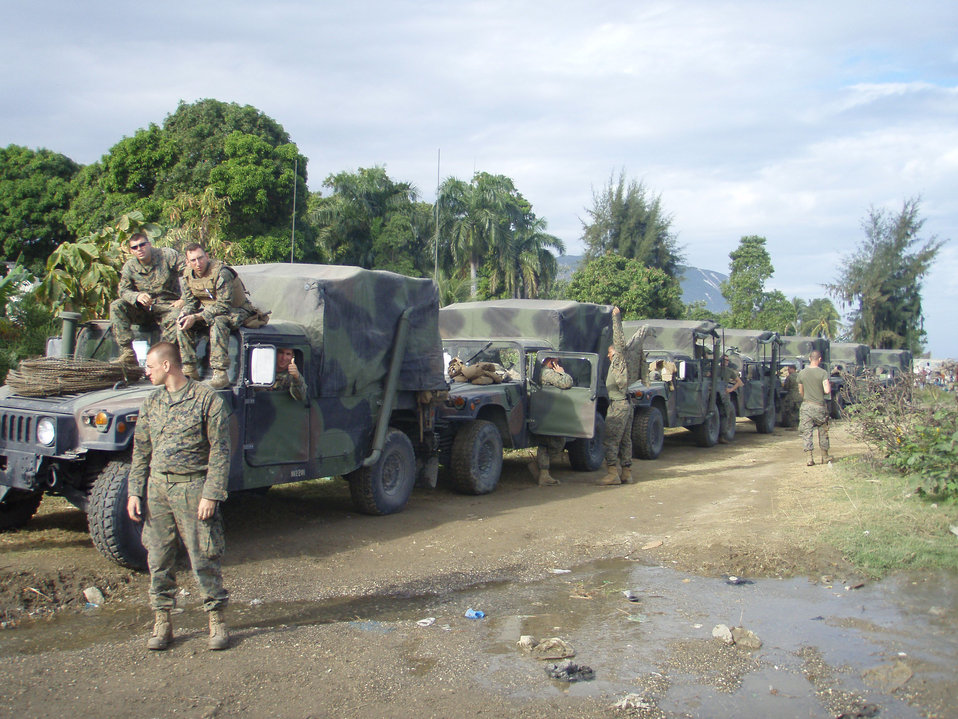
This image depicts a convoy of U.S. Marines who'd been transported by the USS Bataan to Haiti in order to provide security to responders during Operation Unified Response, responding to the Haitian earthquake disaster in January, 2010.